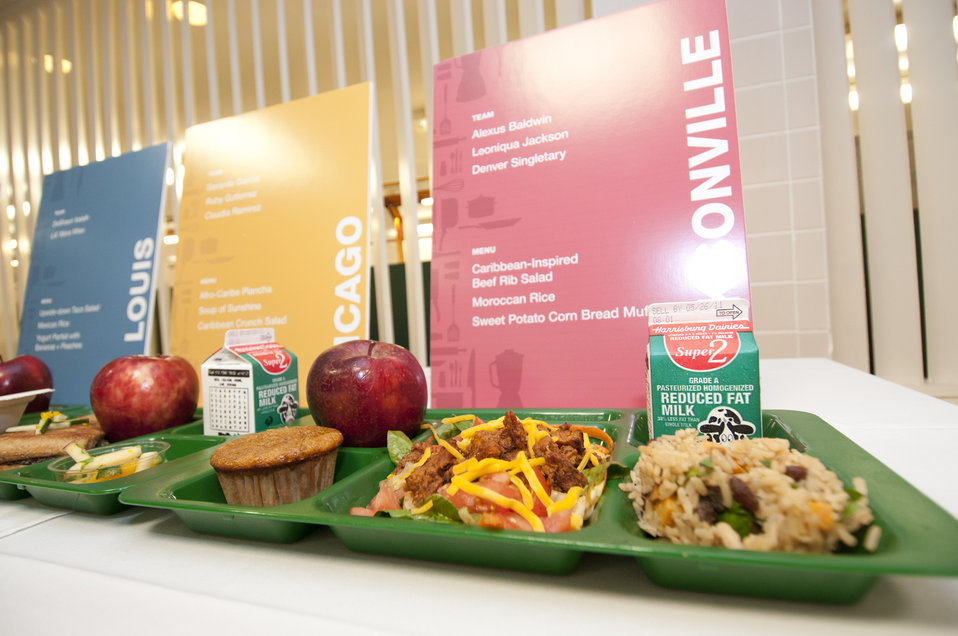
Three of the six meals prepared for the Cooking Up Change, National Healthy Cooking Competition at the USDA in Washington, DC, on Monday, May 23, 2011.